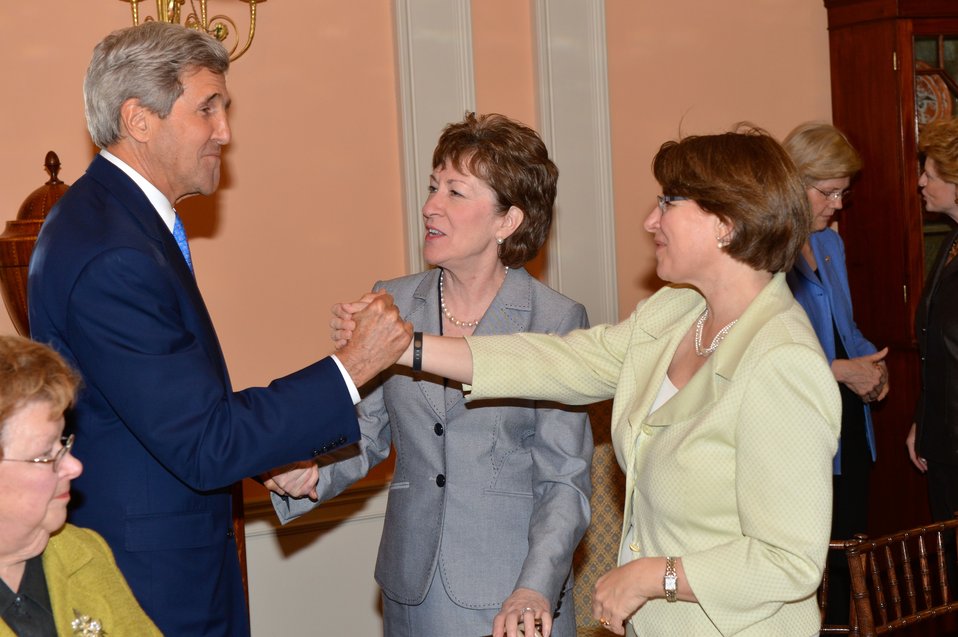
Secretary Kerry Greets Senator Klobuchar

With Senator Susan Collins looking on, U.S. Secretary of State John Kerry greets Senator Amy Klobuchar during a reception and dinner he hosted for female Senators at the U.S. Department of State in Washington, D.C., on May 13, 2014.